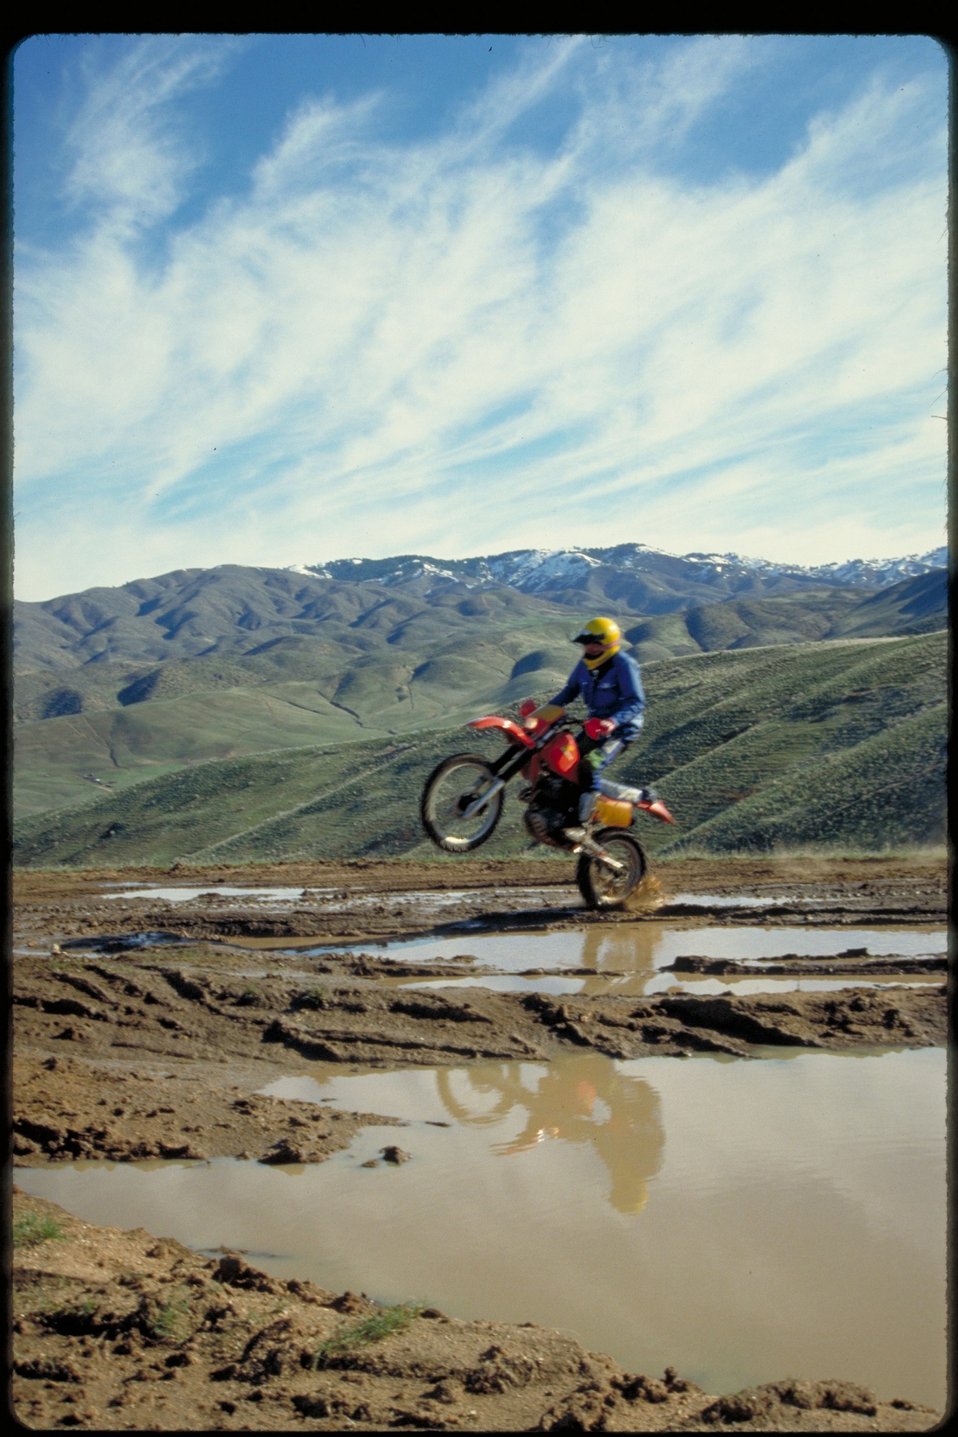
Motocross biker on Boise Front Four Rivers Field Office LSRD Lower Snake River District